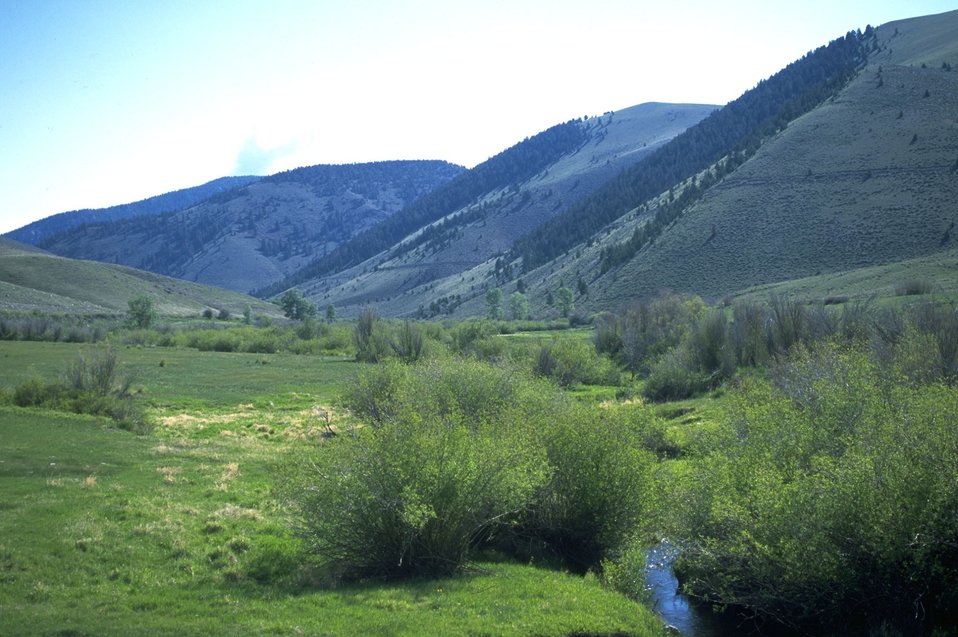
Grassy meadow and creek below mountains